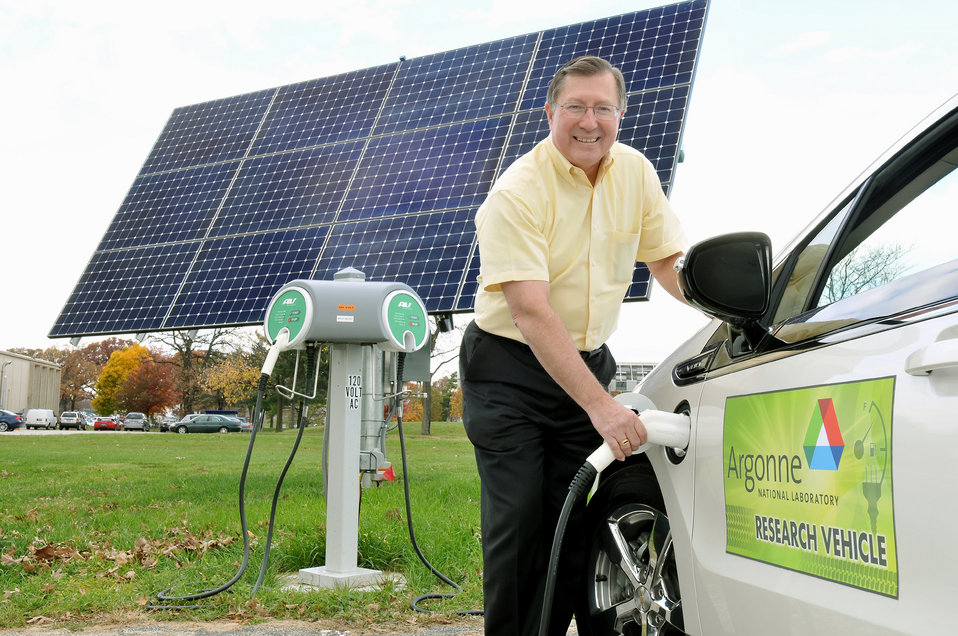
Researcher charges a test vehicle at Argonne National Laboratory's solar power electric vehicle charging station.